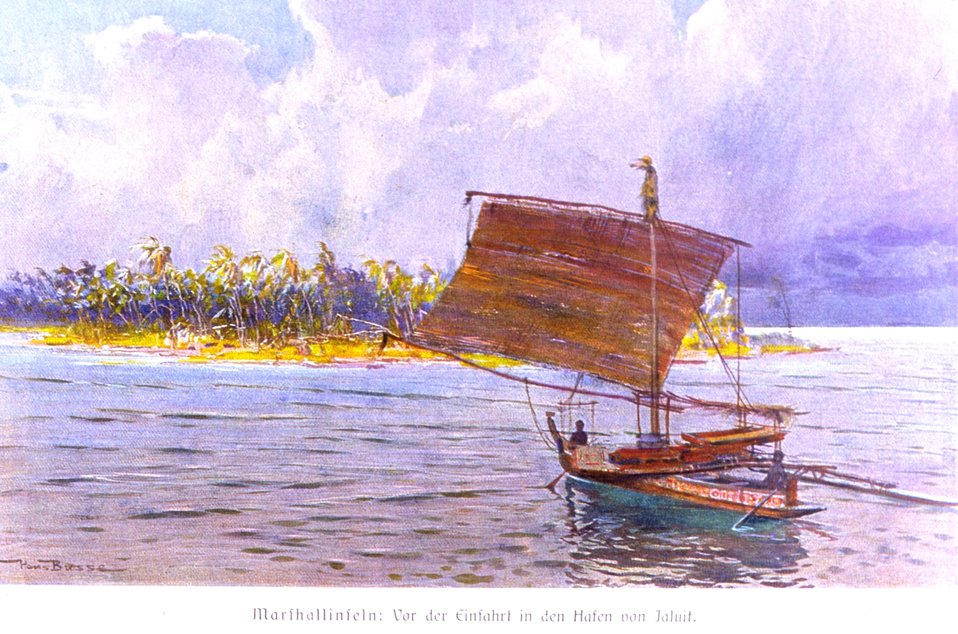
A palm-covered atoll with a native sailing craft in the Marshall Islands. In: 'Das Deutsche Kolonialreich,' by Hans Meyer, 1909. Vol II, p. 340. Library Call Number: Cfd M612 d